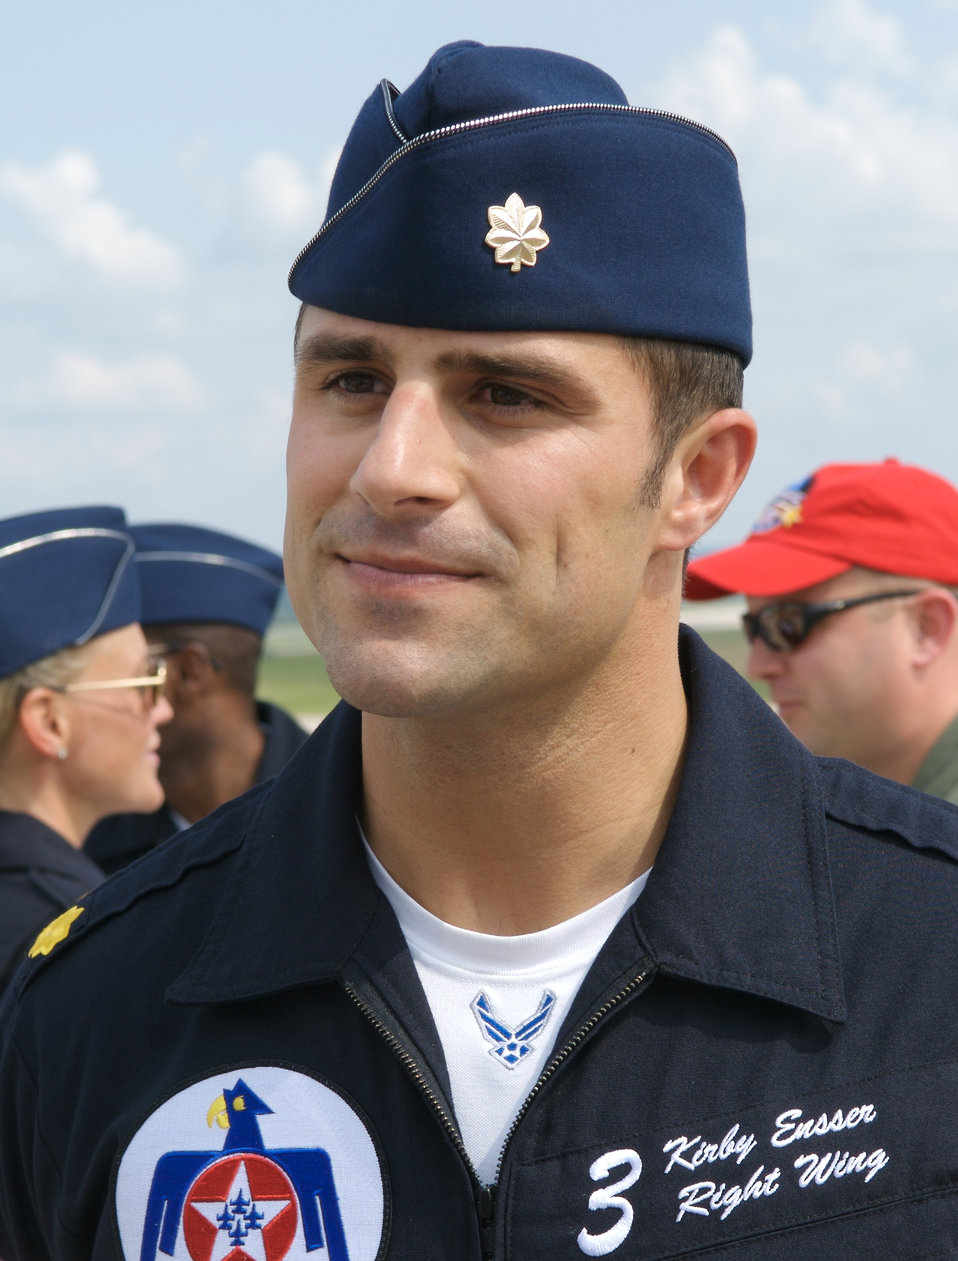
Offutt Airmen hold airshow

Maj. Kirby Ensser visits with special needs visitors at who were treated to a complete airshow Aug 15 at Offutt Air Force Base, Neb. Major Ensser in his first season with the Air Force Air Demonstration Squadron “Thunderbirds,” flies the No. 3 jet as right wing in the diamond formation.